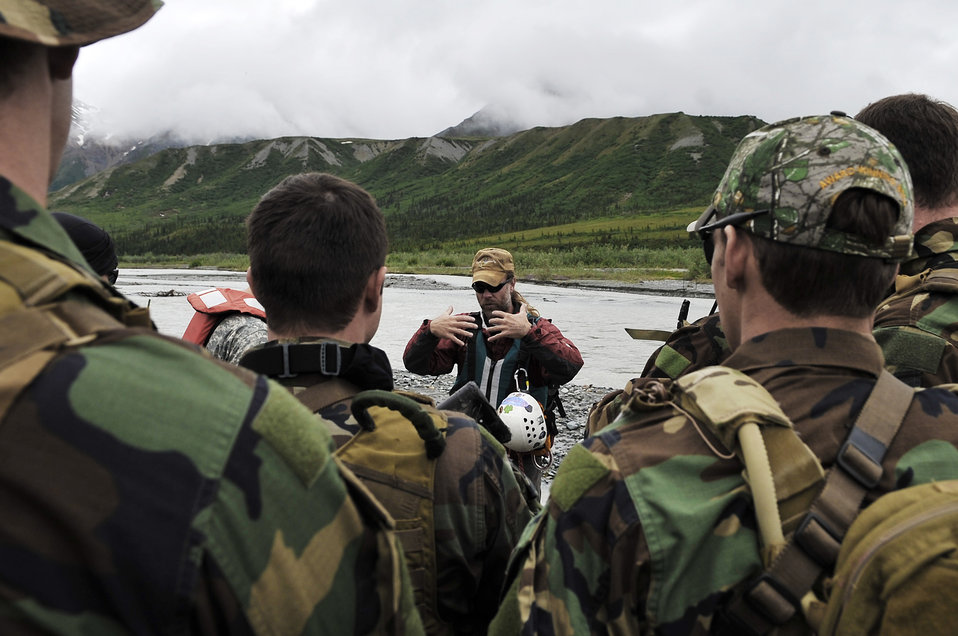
Navy SEALs train during Northern Edge 2009

Steven Decker briefs a group of Navy SEALs on river crossing and rope techniques during a training exercise during Northern Edge 2009 June 17 at Fort Wainwright, Alaska. Northern Edge is a large-scale exercise hosted in Alaska. Mr. Decker is an instructor at the Northern Warfare Training Center.